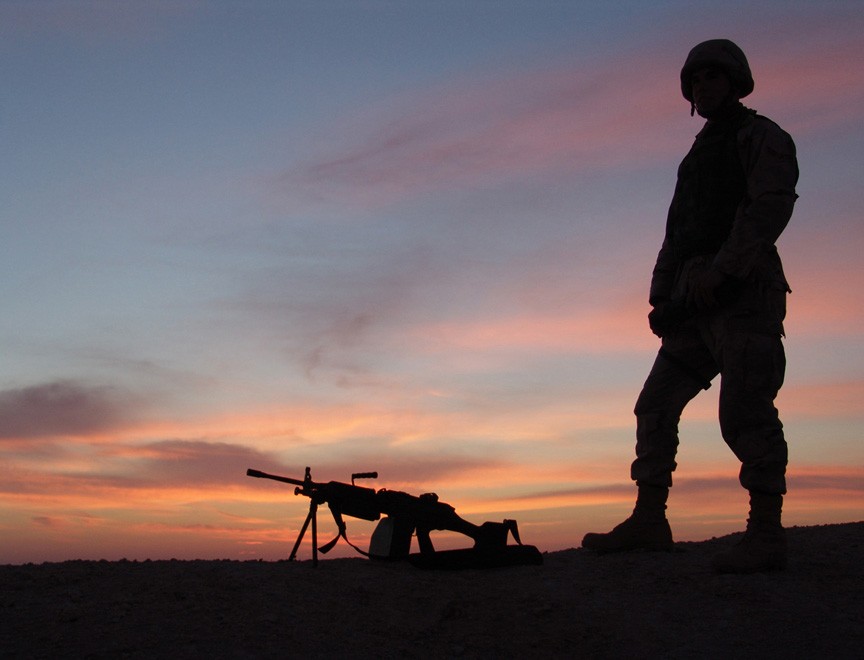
Watchful eyes

SOUTHWEST ASIA (AFPN) -- Airman 1st Class Brian Corso patrols the perimeter of a forward-deployed location. He is part of a 30-Airman security forces flight that provides 24-hour protection for the base. He is assigned to the 386th Expeditionary Security Forces Squadron.